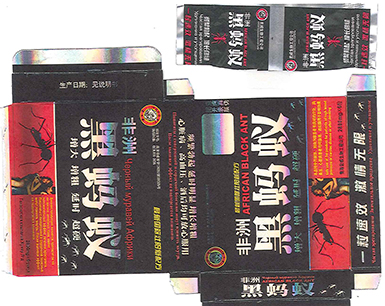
RECALLED – Dietary Supplement

April 1, 2014 – Product Recall – Nova Products, Inc. Issues Voluntary Nationwide Recall of Dietary Supplements with Undeclared Active Pharmaceutical Ingredients.